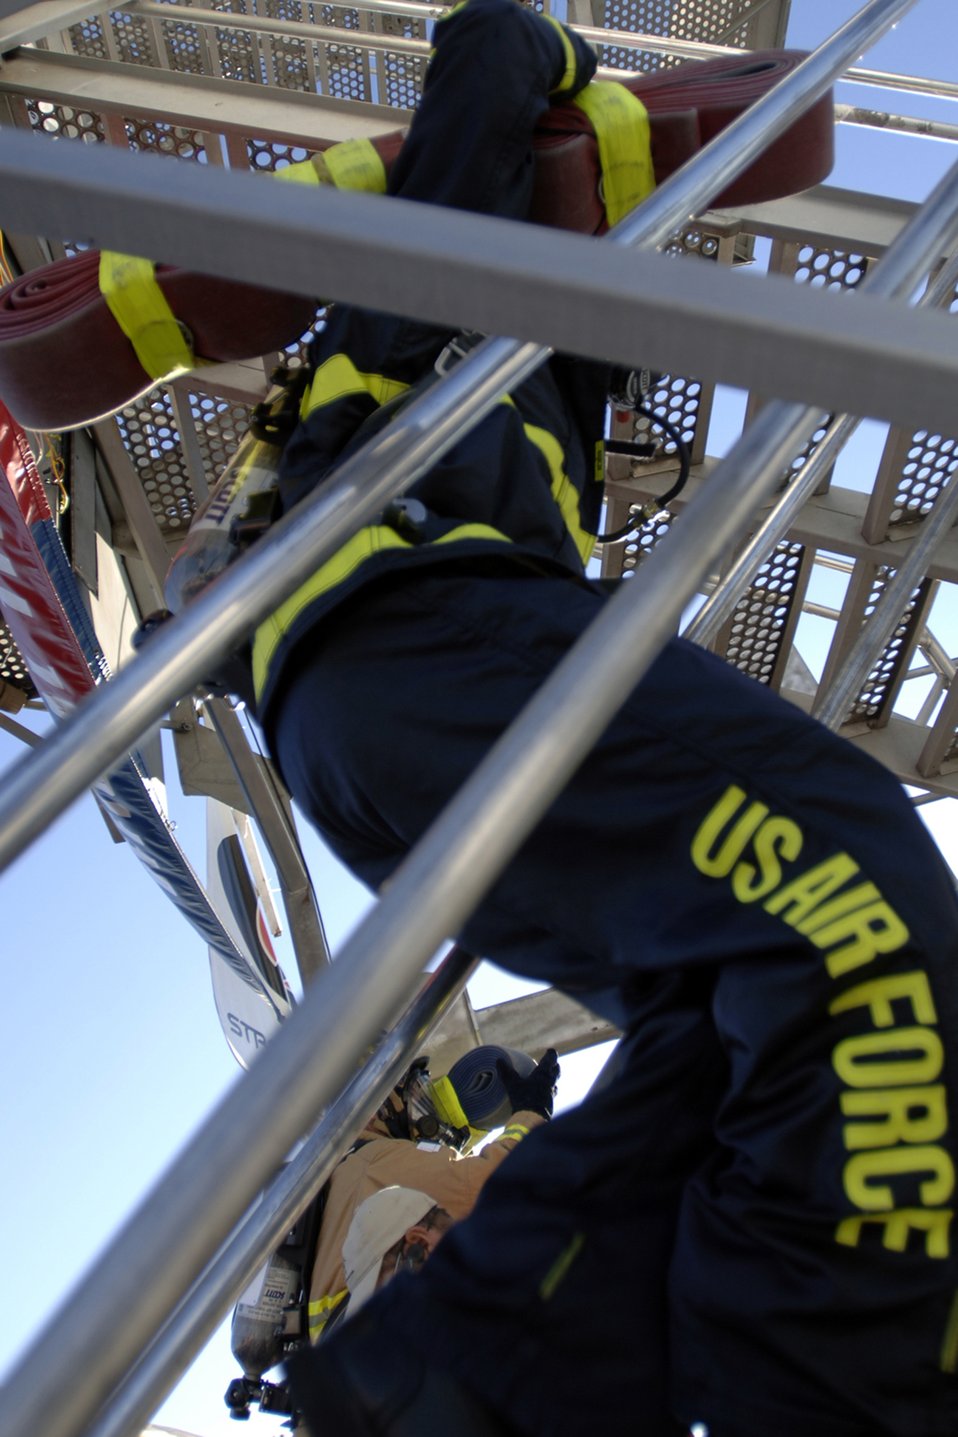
Up Stairs

Dave Chiodo, Team Travis, runs up five flights of stairs with a wrapped up fire hose during the Firefighter Combat Competition at Morrow, Ga., Oct. 13, 2006.